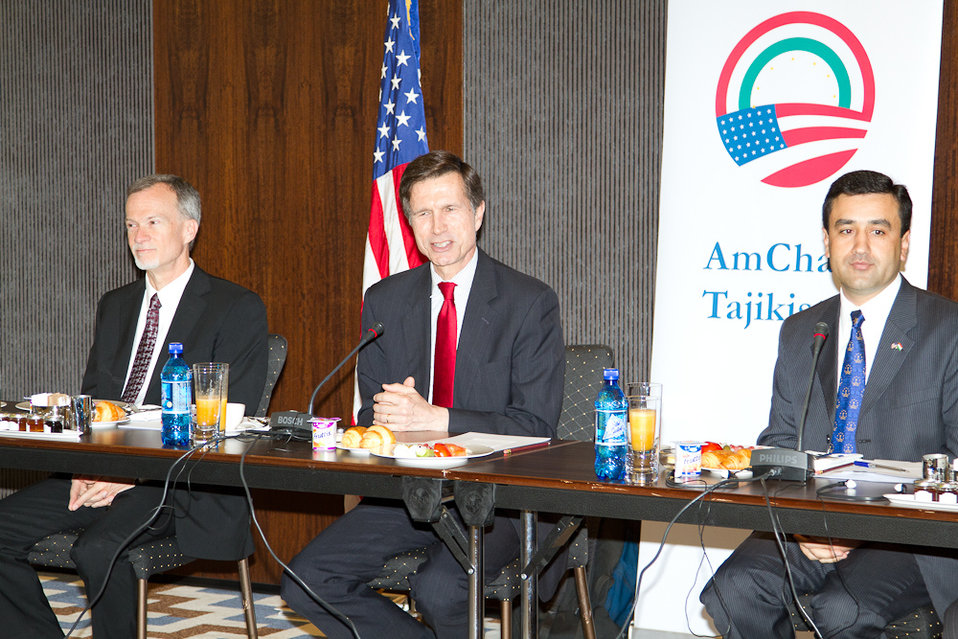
Assistant Secretary Blake Leads U.S. Government-Interagency Delegation to U.S.-Tajikistan Annual BIlateral Consultations

U.S. Assistant Secretary of State for South and Central Asian Affairs, Robert O. Blake, Jr. leads the U.S. government-interagency delegation to the second U.S. - Tajikistan Annual Bilateral Consultations in Dushanbe, Tajikistan, April 11 - 12, 2011. [Damian Wampler/ State Department photo/ Public Domain]